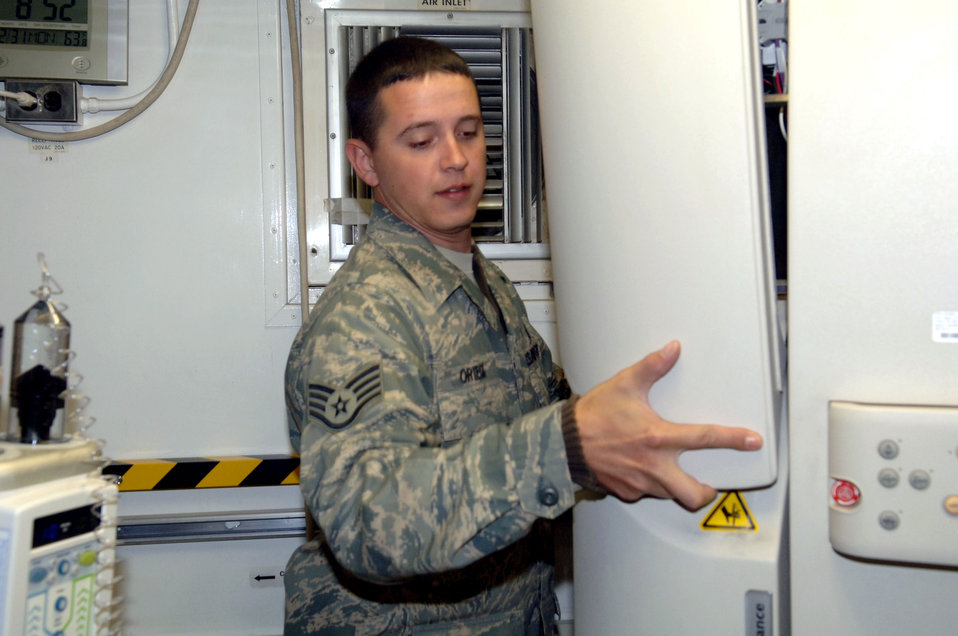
They'll get your motor running

Staff Sgt. Orlando Ortega uses an allen wrench to loosen screws on the gantry cover of a computerized tomography machine Dec. 31 at the Air Force Theater Hospital at Balad Air Base, Iraq. Sergeant Ortega is a 332nd Expeditionary Medical Support Squadron biomedical equipment technician deployed from Barksdale Air Force Base, La.